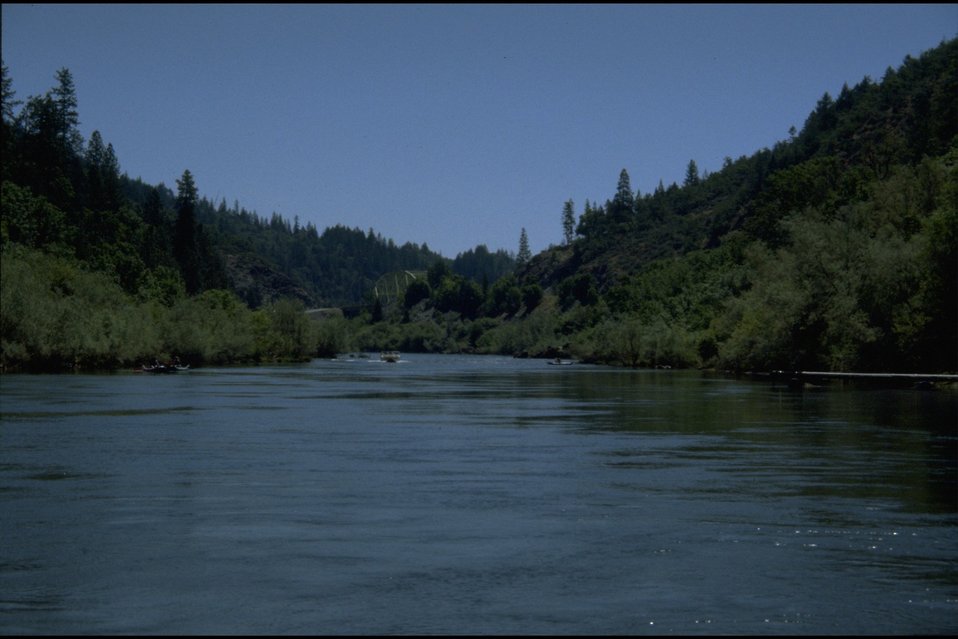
Looking down river toward Hellgate Bridge in the background.